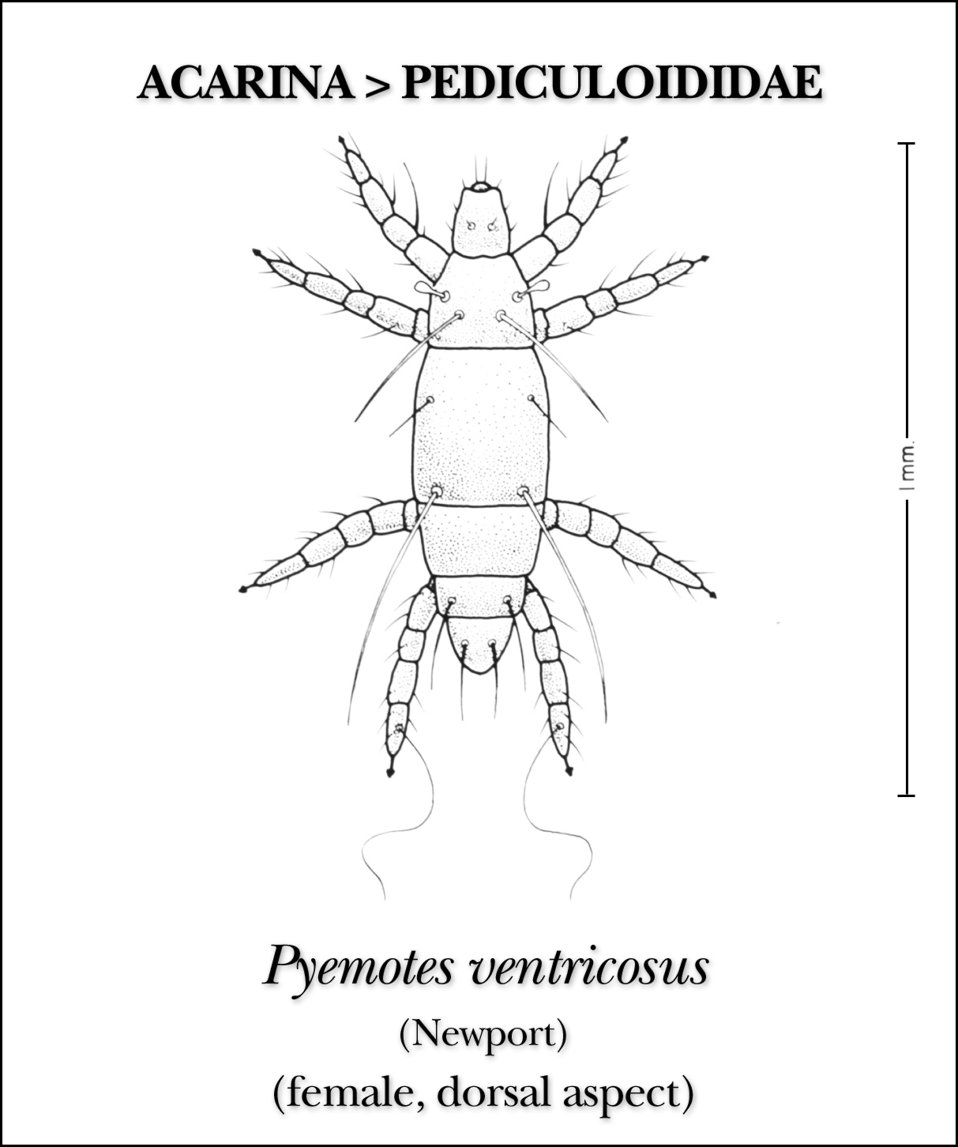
This illustration reveals the features found on the dorsal surface of the female mite, Pyemotes ventricosus.